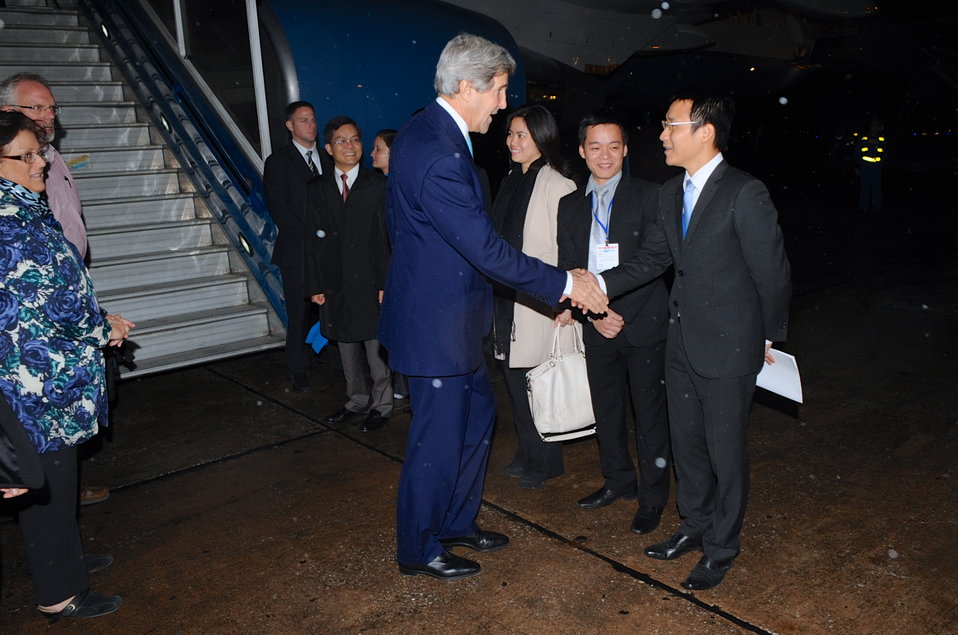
Secretary Kerry Arrives in Hanoi, Vietnam

U.S. Secretary of State John Kerry, backed by U.S. Ambassador to Vietnam David Shear and Deputy Chief of Mission Claire Pierangelo, is greeted by Vietnamese officials upon arriving in Hanoi, Vietnam on December 15, 2013.